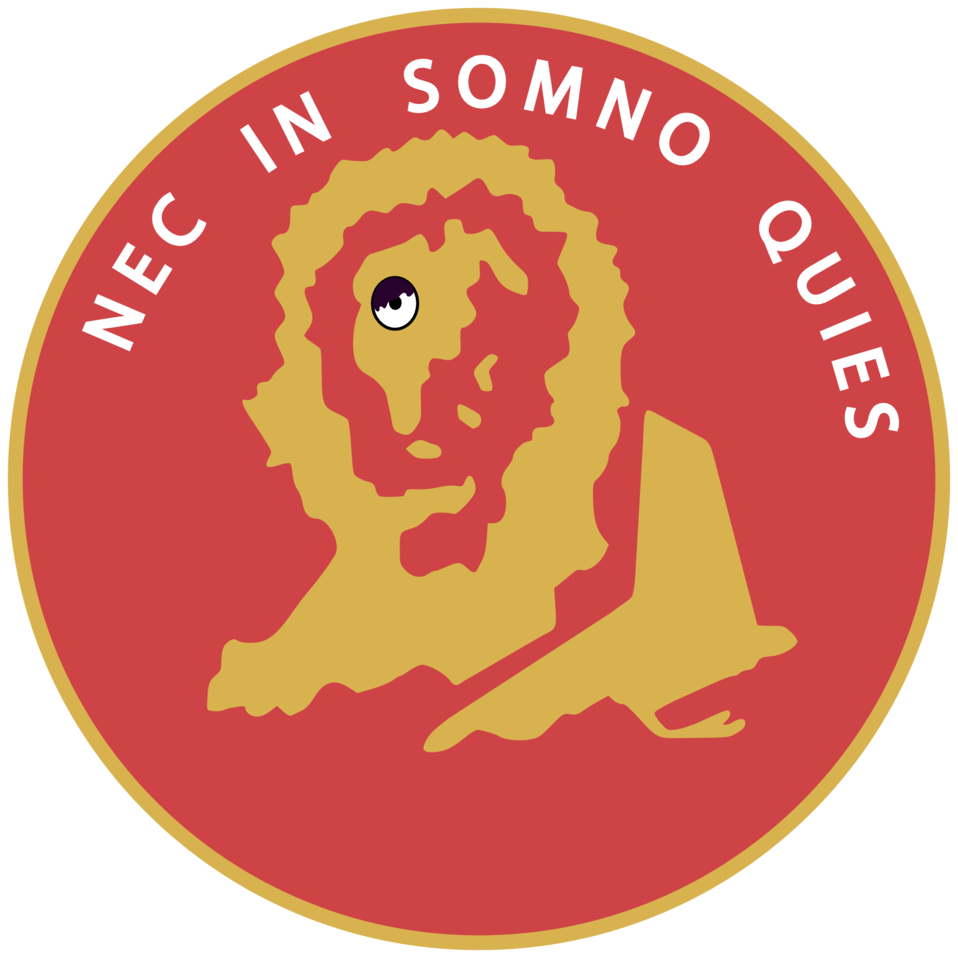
ensign of the 15º Stormo Bombardamento Terrestre (15th Terrestrial Bombing Wing) of the Regia Aeronautica (Royal Italian Air Force). Italiano: distintivo del 15º Stormo Bombardamento Terrestre della Regia Aeronautica. This vector image was created with Inkscape.